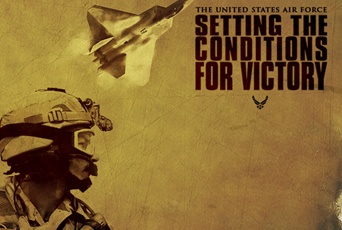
Setting the conditions for victory

A new video,